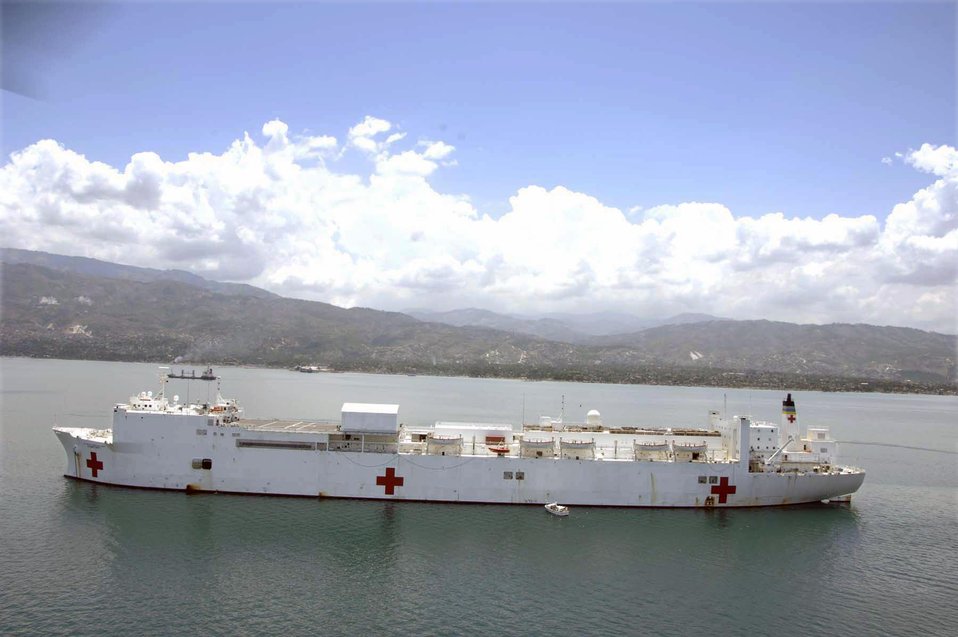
Continuing Promise 09

The hospital ship USNS Comfort is anchored in Port-au-Prince during the first stop of the seven-nation Continuing Promise 2009 deployment. Continuing Promise 2009 is a four-month humanitarian and civic assistance mission to Latin America and the Caribbean.